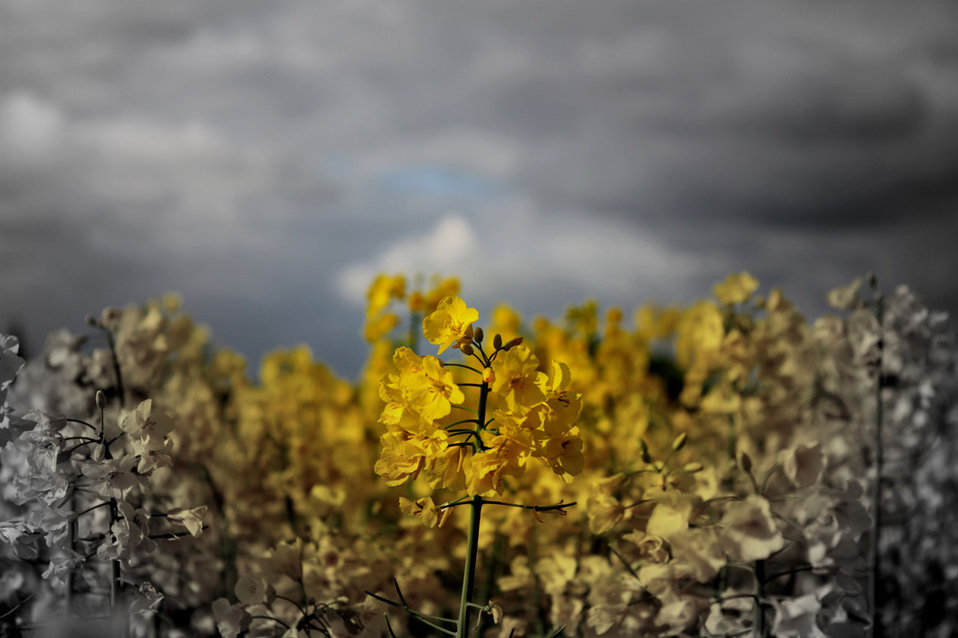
Yellow field.